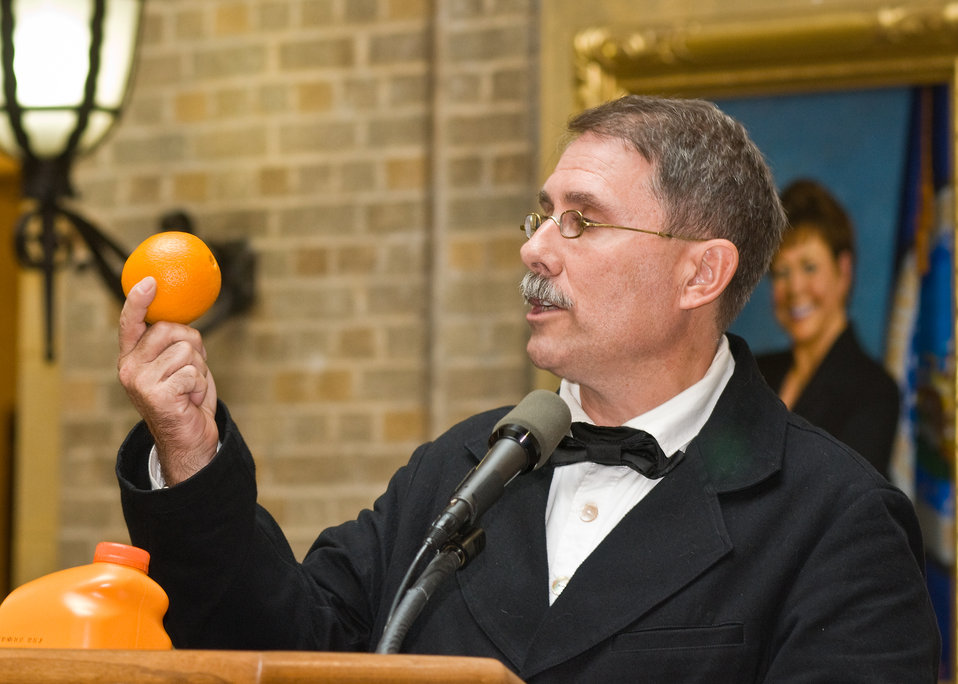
Dr. Robert Griesbach, Deputy Assistant Administrator, Agriculture Research Service, Office of technology Transfer spoke of “Science in Your Shopping Cart.” He spoke of the evolution of frozen orange juice and how the benefits of agricultural research have improved the quantity and quality of the food we take for granted everyday at the, 'Celebrating Science Bed Bugs...Chocolate...and Beyond' event held at the United States Department of Agriculture in Washington, DC, on Monday, October 4, 2010. USDA Photo 10di1515-56 by Bob Nichols.